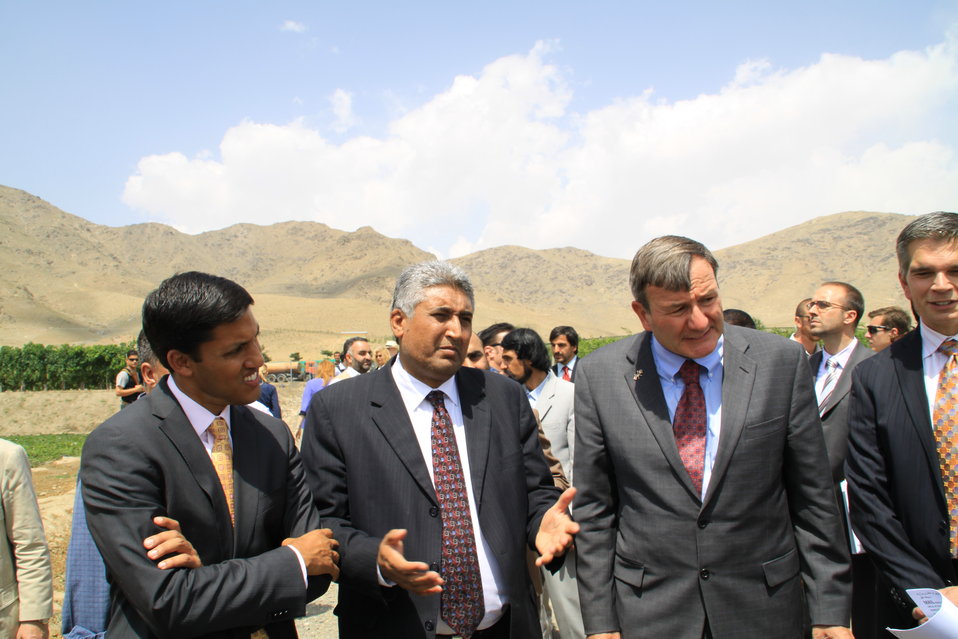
Badam Bagh Farm